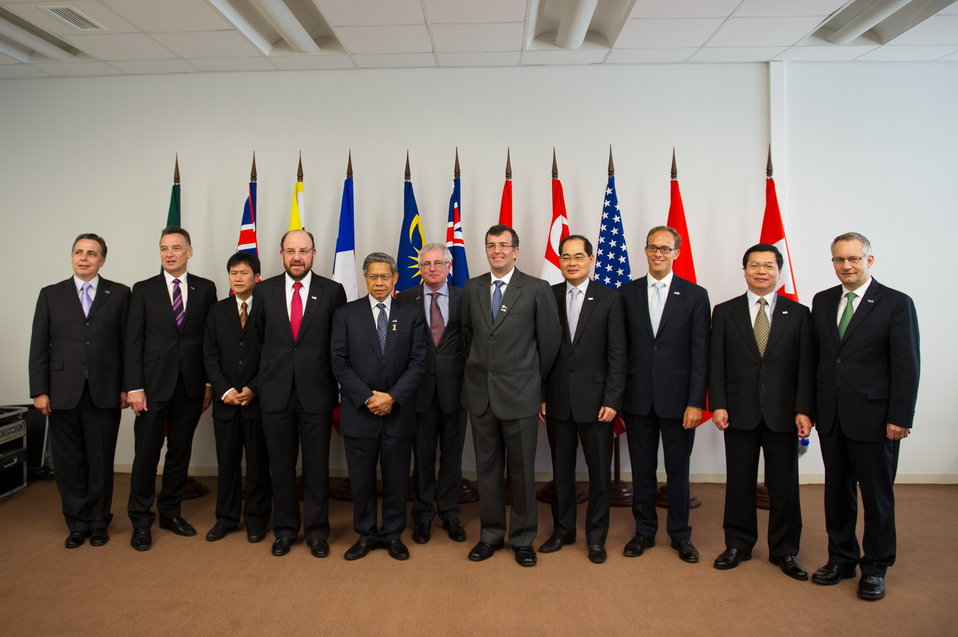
Trade Ministers from Trans-Pacific (TPP) Meeting in Vladivostok

Deputy U.S. Trade Representative Demetrios Marantis, third from right, poses with trade ministers from Trans-Pacific Countries (Bruno Ferrari Garcia de Alba, Mexico; Craig Emerson, Australia; Lim Jock Seng, Brunei; Alfredo Moreno, Chile; Mustapa Mohamed, Malaysia; Tim Groser, New Zealand; Jose Luis Silva Martinot, Peru; Lim Hng Kiang, Singapore; Demetrios Marantis, United States; Vu Huy Hoang, Vietnam; Edward Fast, Canada) in Vladivostok, Russia, September 6, 2012.